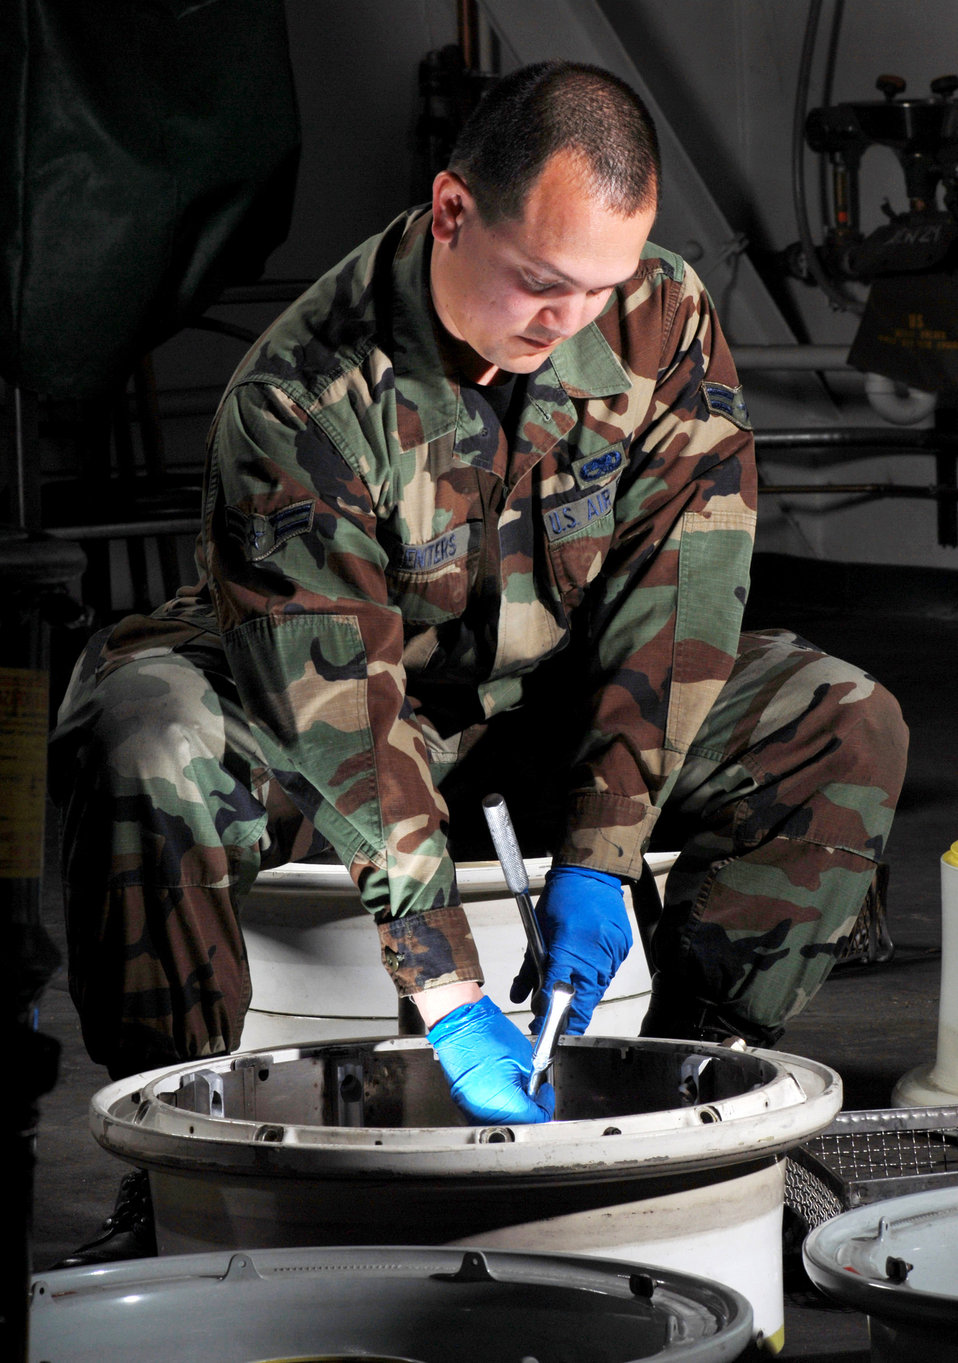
It's time to re-tire

Airman 1st Class Jonathan Centers, an aircraft mechanic from the Aero Repair Shop at March Air Force Base, Calif., uses a ratchet wrench Feb. 3 to install a heat shield on a KC-135 Stratotanker refueling aircraft main wheel. March ARB, located in Southern California, is home to the largest air mobility wing in the Air Force Reserve Command. It also is home to units from the Army Reserve, Navy Reserve, Marine Corps Reserve and Air National Guard.